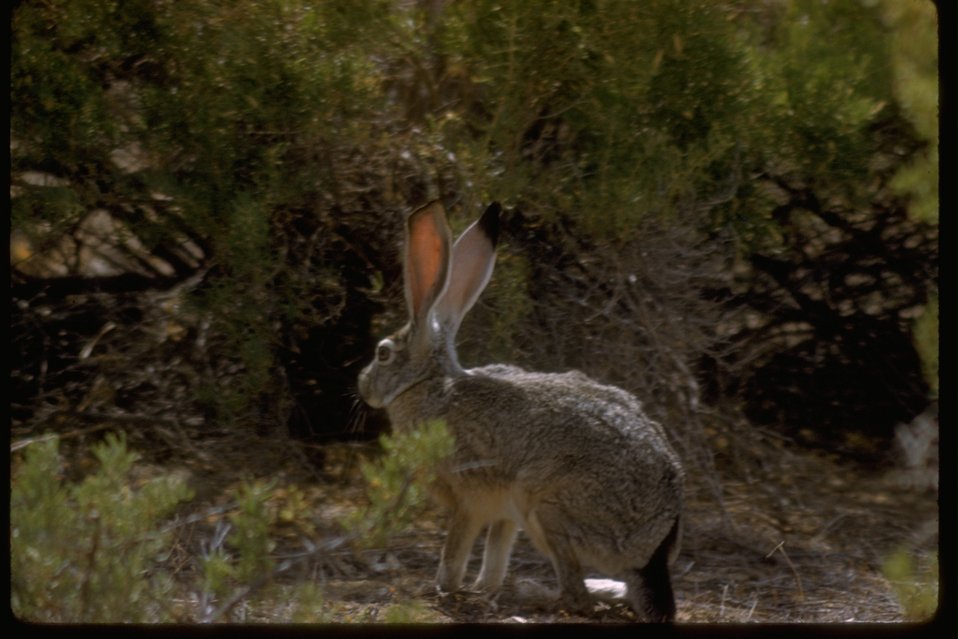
Black tailed jack rabbit in Juniper Forest Management Area.